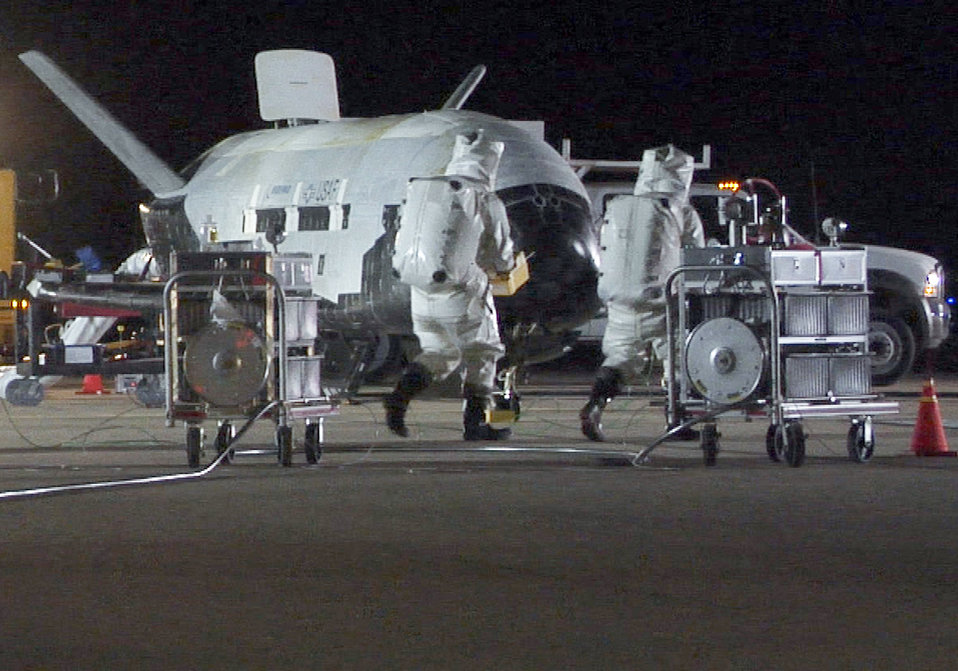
X-37B Orbital Test Vehicle 1

Technicians in self-contained atmospheric protective ensemble suits start to conduct initial checks on the X-37B Orbital Test Vehicle 1) after its landing Dec. 3, 2010, at Vandenberg Air Force Base, Calif. This is the Air Force's first unmanned re-entry spacecraft.